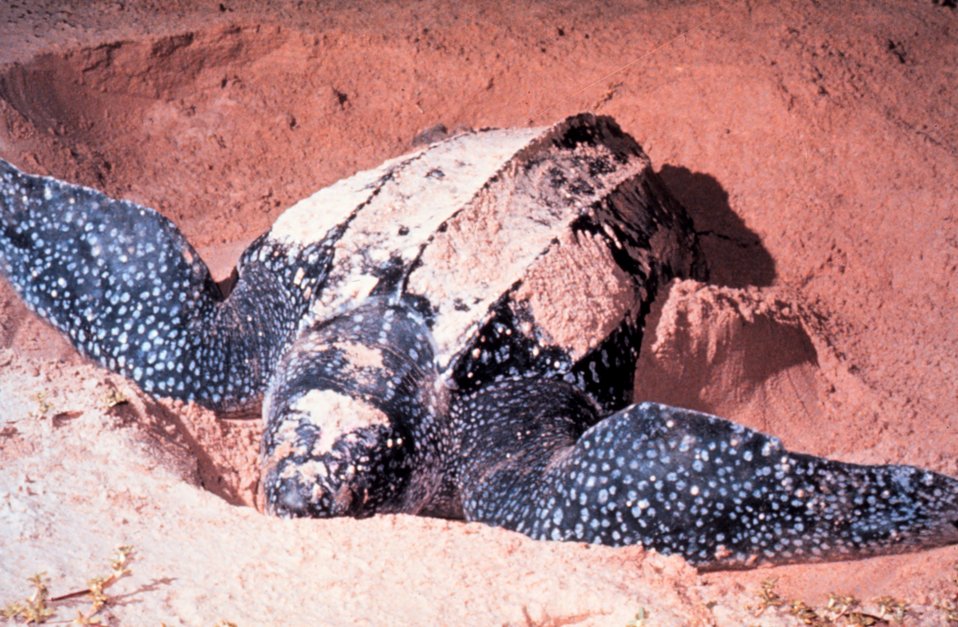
Leatherback sea turtles nest occasionally on the beach at Canaveral National Seashore. The leatherback is an endangered species of sea turtle and is one of the largest in the world. It can grow to be over 6 feet long and weigh over 1,000 pounds.